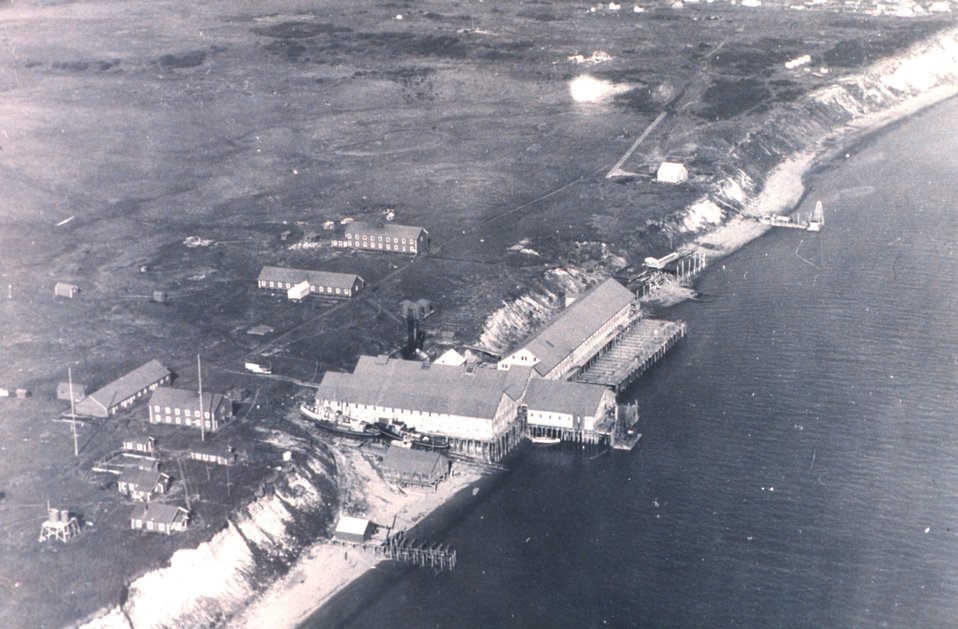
The Lower Naknek Cannery of the Pacific American Fisheries. F&WS 12,153.